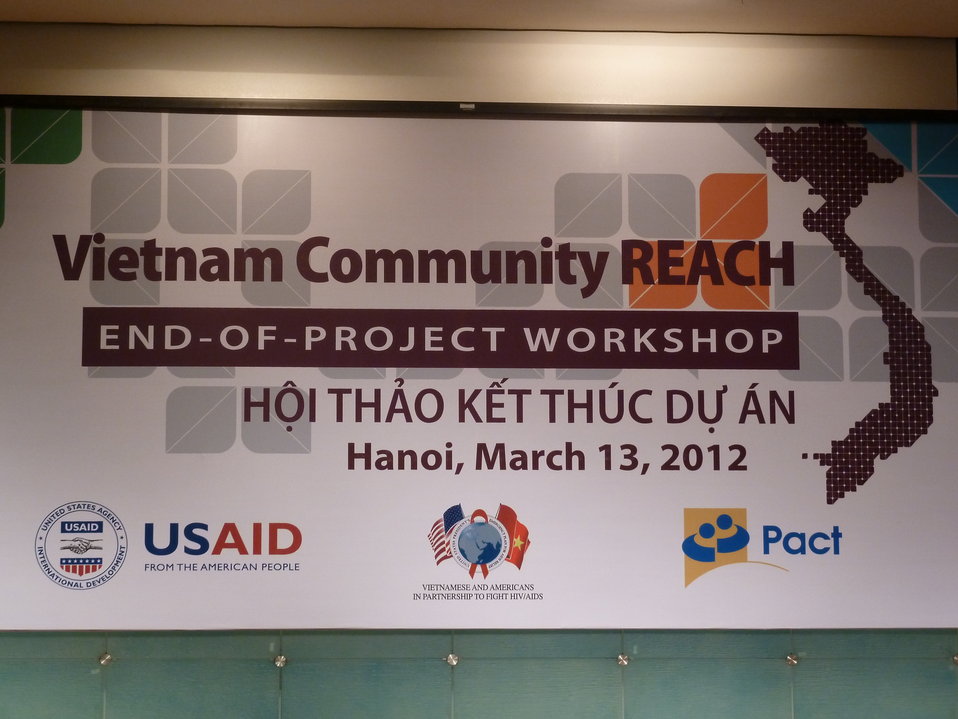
USAID, PEPFAR, and Pact award certificates to local and international partners for their work in addressing HIV in Vietnam

Community REACH project close-out with USAID and implementing partner, Pact